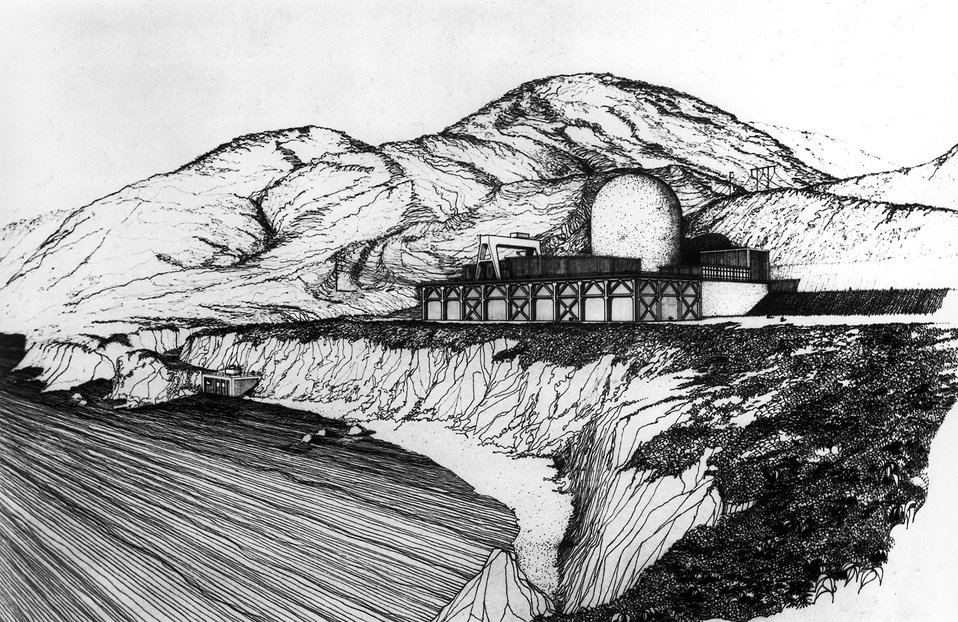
This is the architectural rendering of the 1,060,000-kilowatt atomic generating plant which Pacific Gas & Electric Company will build near Diablo Canyon in Lan Luis Obispo County. Circa 1968